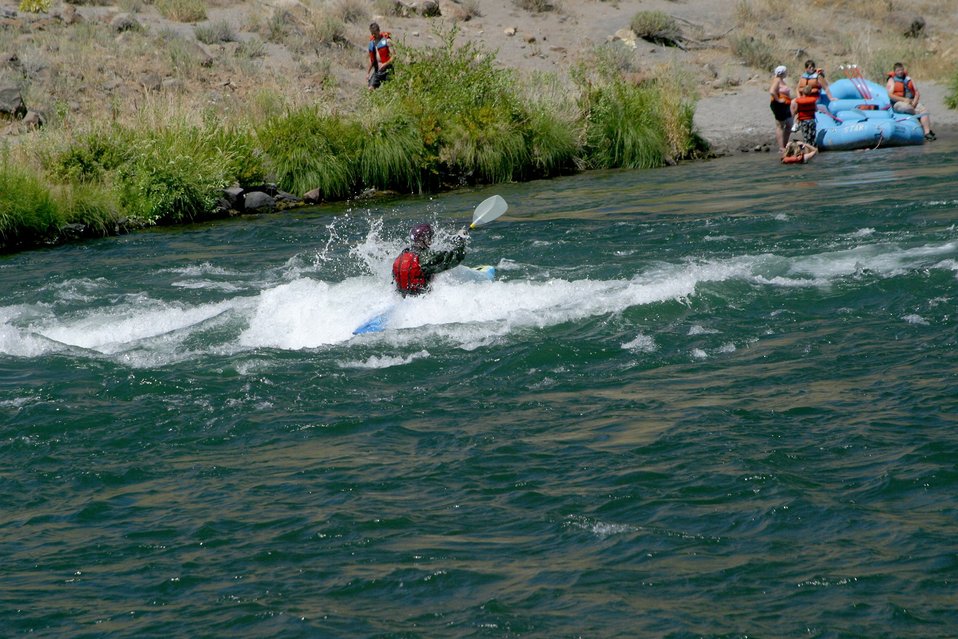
Elevator Rapids near Mile 46 on the Lower Deshcutes River. 7/26/03 Pelton Dam 3600 cfs: Moody Rapids 4300 cfs.